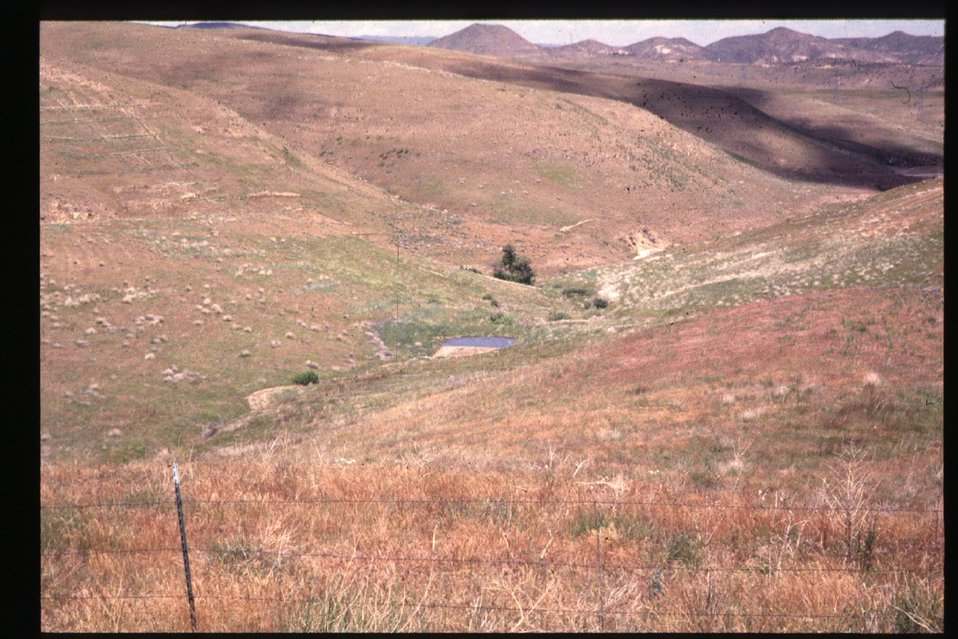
8th Street Fire Four Rivers Field Office LSRD Lower Snake River District